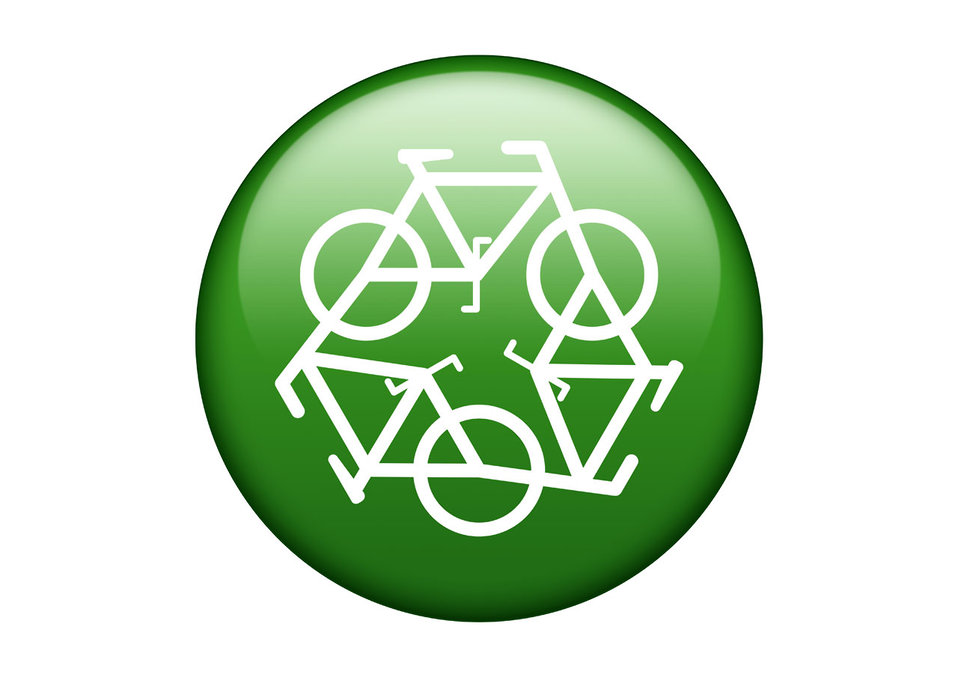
Green recycle symbol

Interesting green recycle symbol.